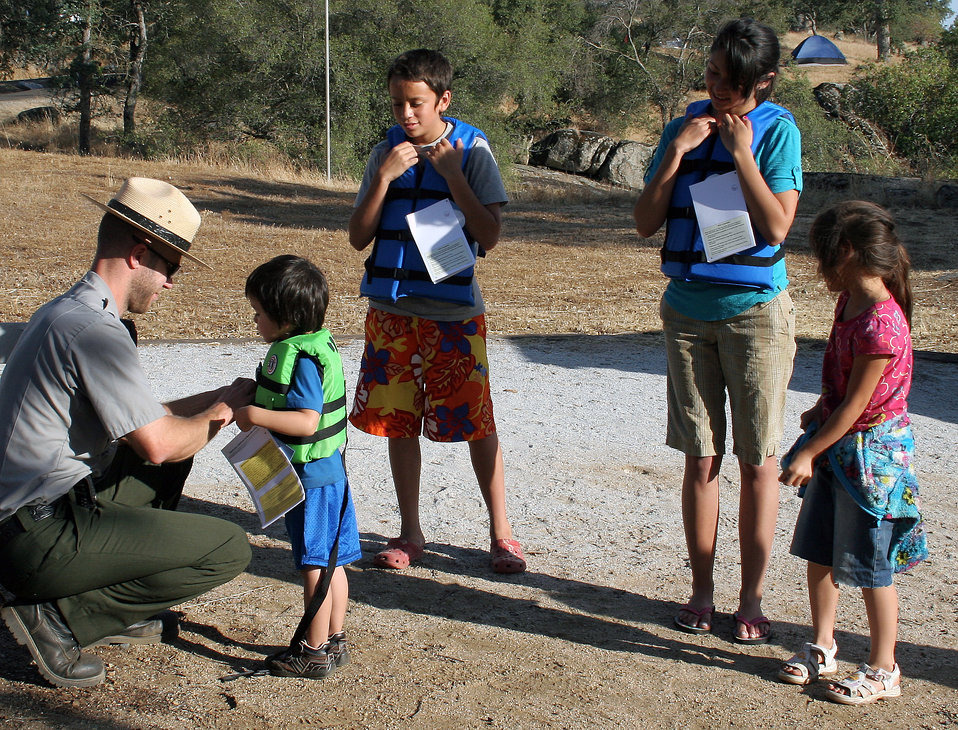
Life Jacket Trade-in Day 2013

Andy Steele, park ranger, presents a brand new life jacket in trade for a used item during Life Jacket Trade-in Day, May 24, 2013 at the U.S. Army Corps of Engineers Sacramento District facility at Eastman Lake, Raymond, Calif. The life jacket exchange was sponsored by the California Department of Boating and Waterways.